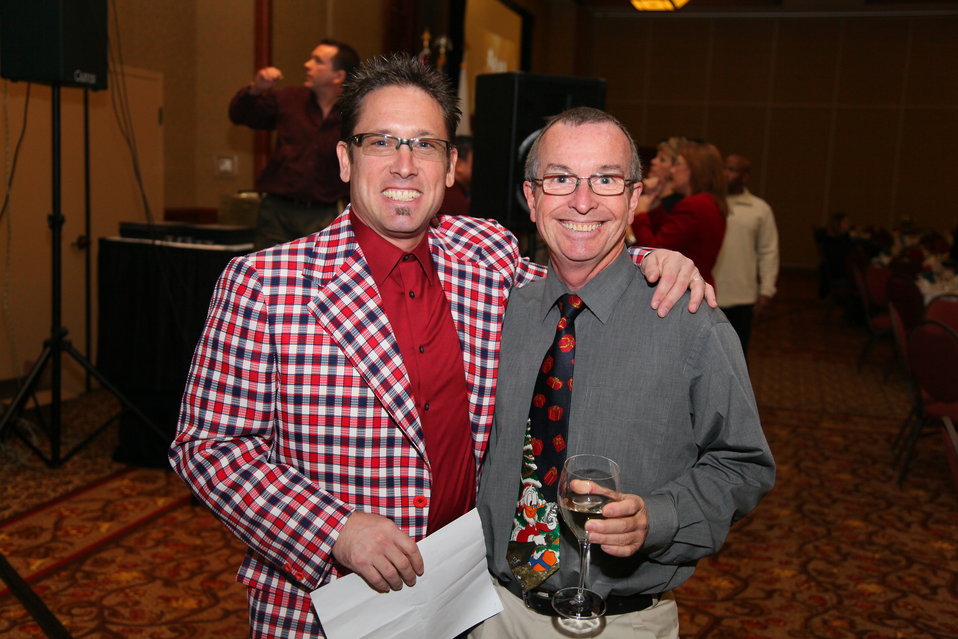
Sacramento District Holiday Party 2011